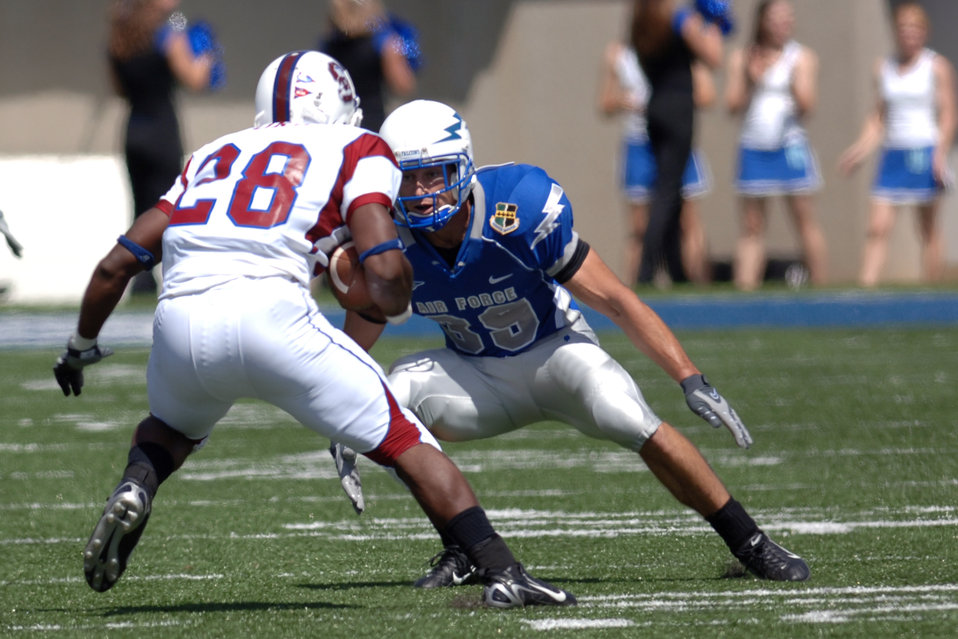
Calhoun era kicks off with 34-3 win

Air Force corner back Garrett Rybak goes one-on-one in the open field with South Carolina State running back Will Ford, during their Sept. 1 game at Falcon Stadium, won by the bluesuiters 34-3.